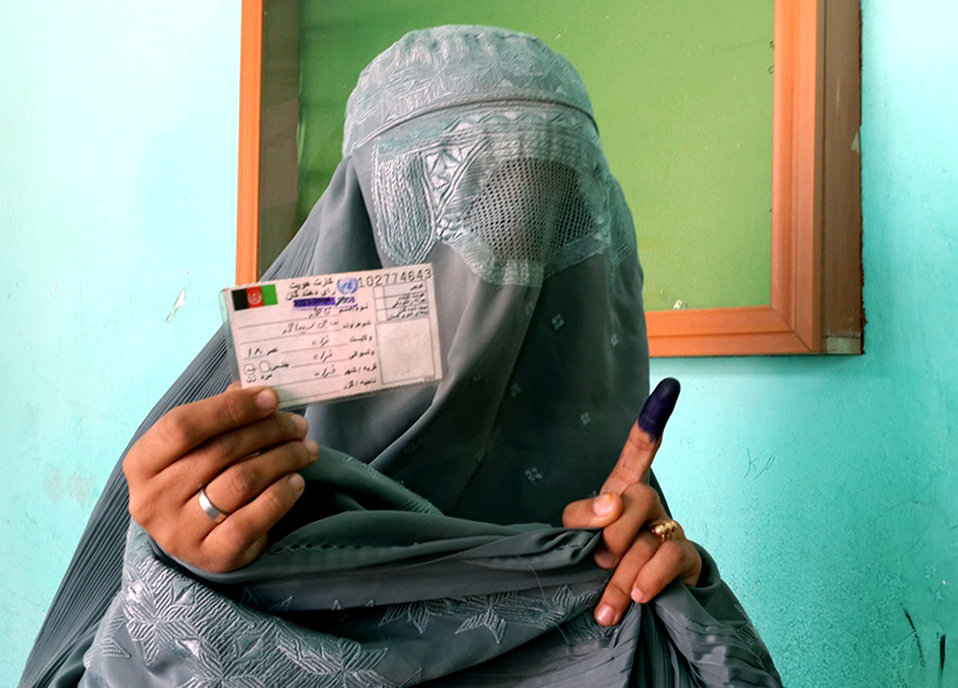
A woman after casting her vote shows her finger and voting card to media-people in Farah province.